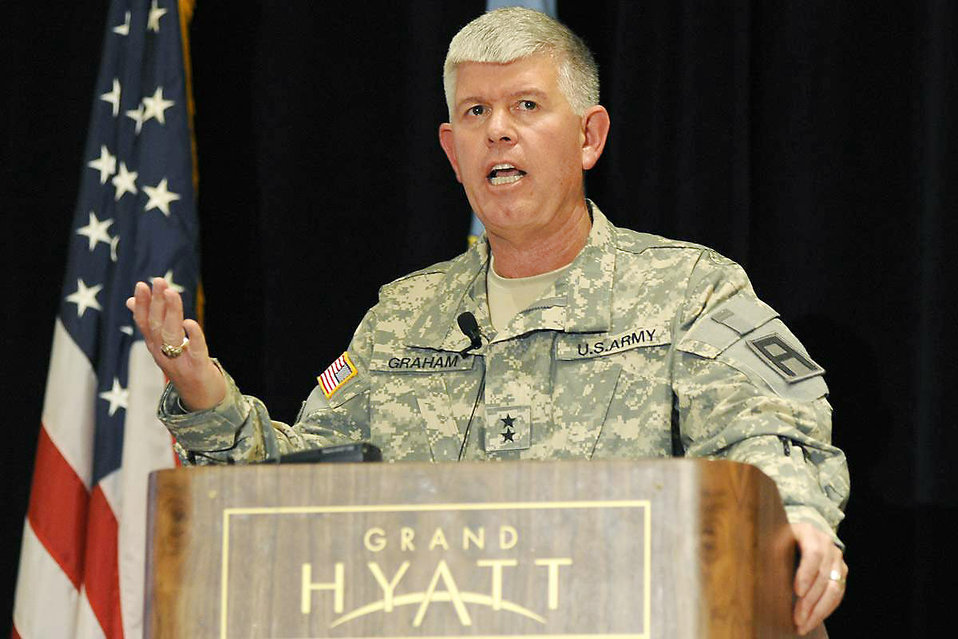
DOD suicide prevention conference under way

Army Maj. Gen. Mark Graham, who lost a son to suicide, speaks to 750 military and civilian specialists during the 2009 Department of Defense/Veterans Affairs Annual Suicide Prevention Conference Jan. 12 in San Antonio.